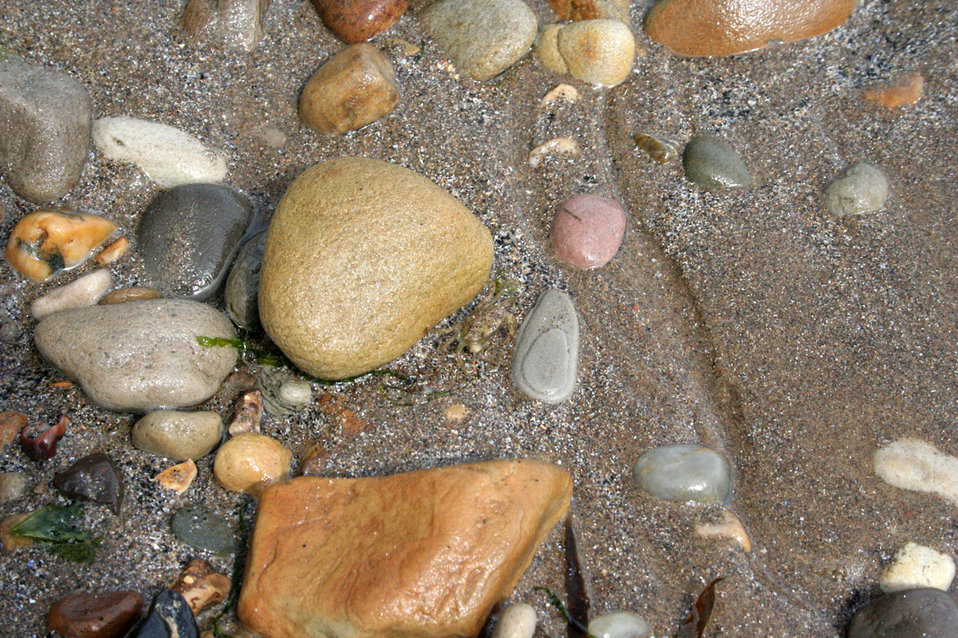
Pebbles on the beach with a tiny crab.